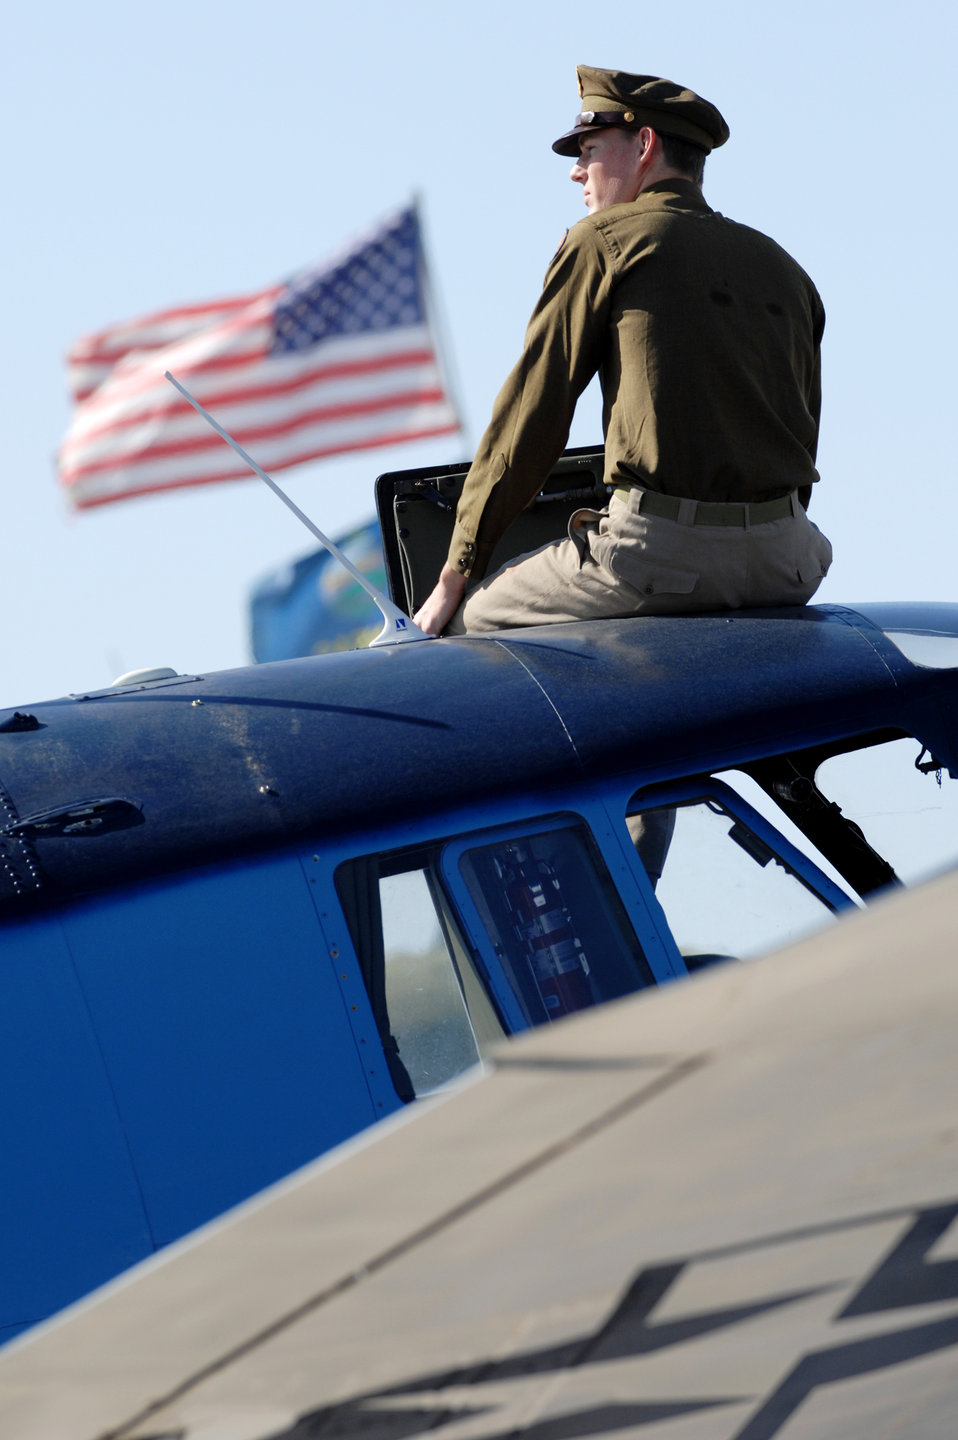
Thunderbirds close air show season

Ben Johnson, a Nellis Air Force Base, Nev., open house volunteer, sits a top a PV-2 Harpoon used during World War II Nov. 14, 2009, while wearing vintage U.S. Army Air Corps clothing. The PV-2 Harpoon is a static display at the 2009 Aviation Nation open house.